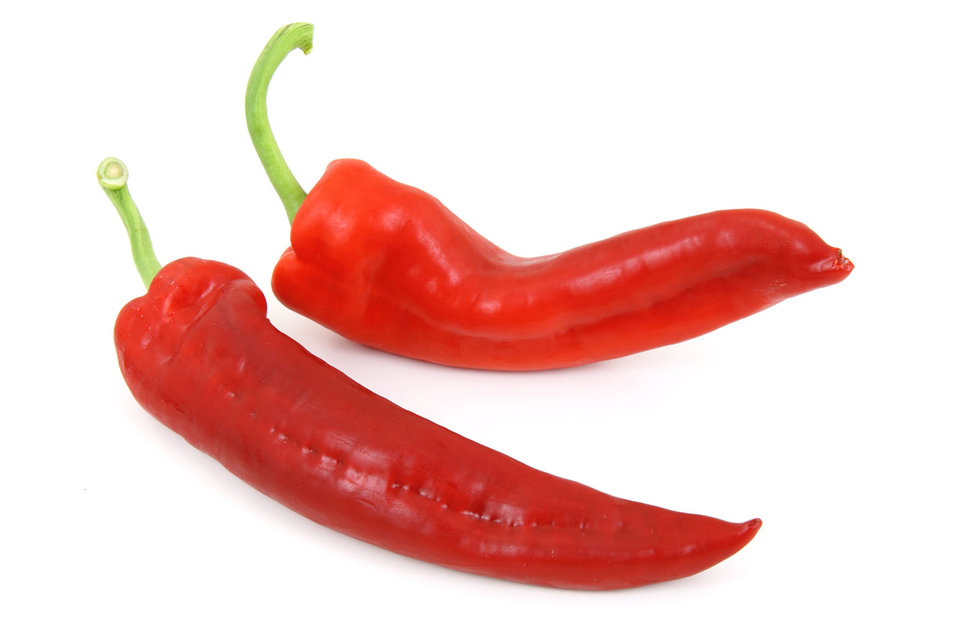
Red peppers isolated on white background.